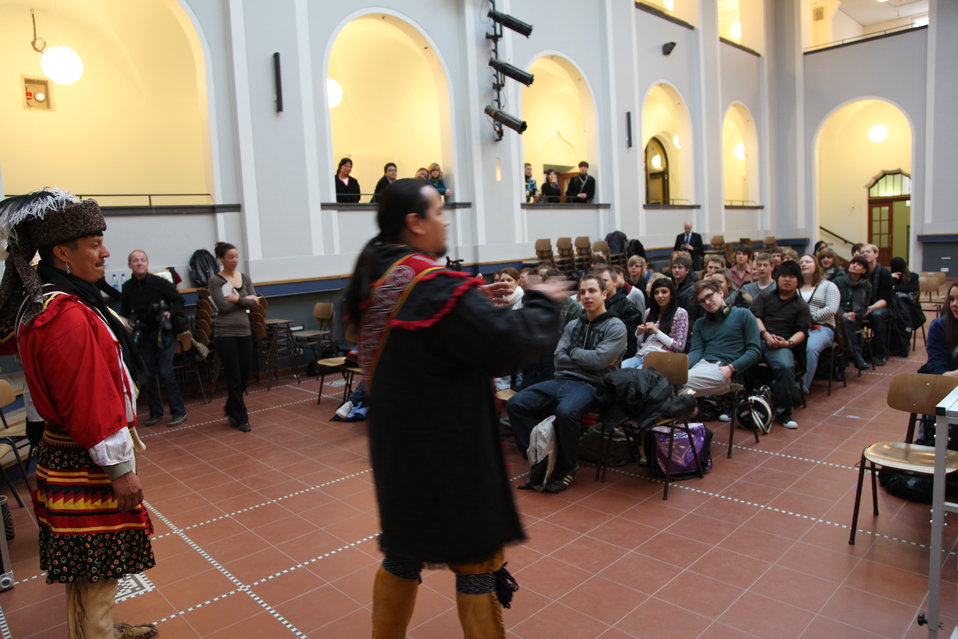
Native Americans Talk About Their Culture

Native Americans visit Paul-Natorp-Gymnasium to talk about their culture in Berlin-Friedenau, Germany, on March 11, 2010.